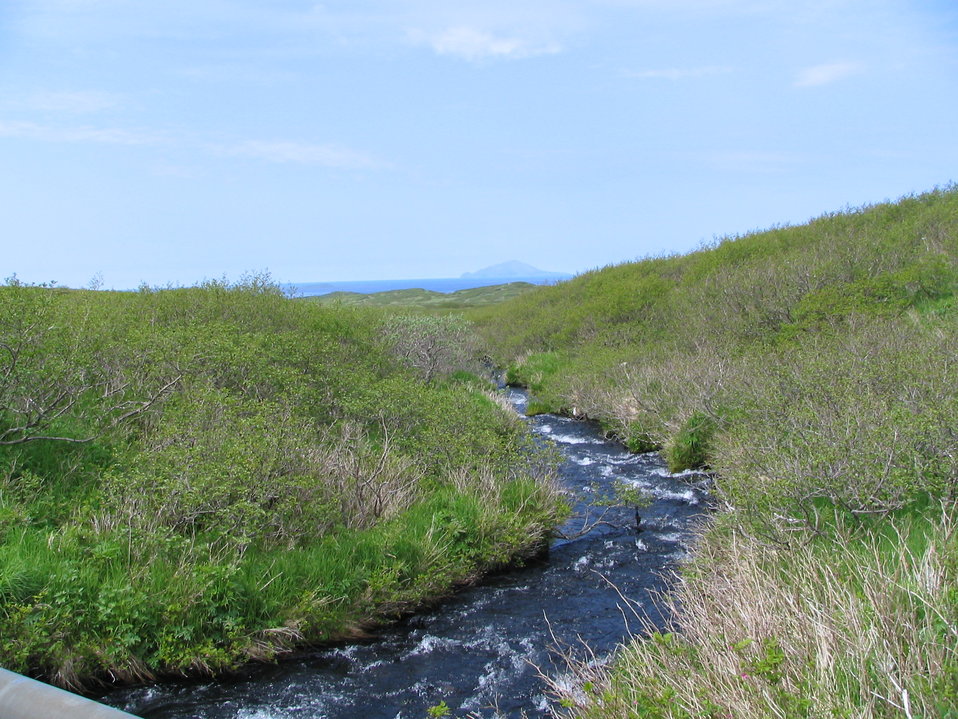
Izembek Landscape

In wilderness near Frosty Peak, Amak Island in background, Izembek National Wildlife Refuge